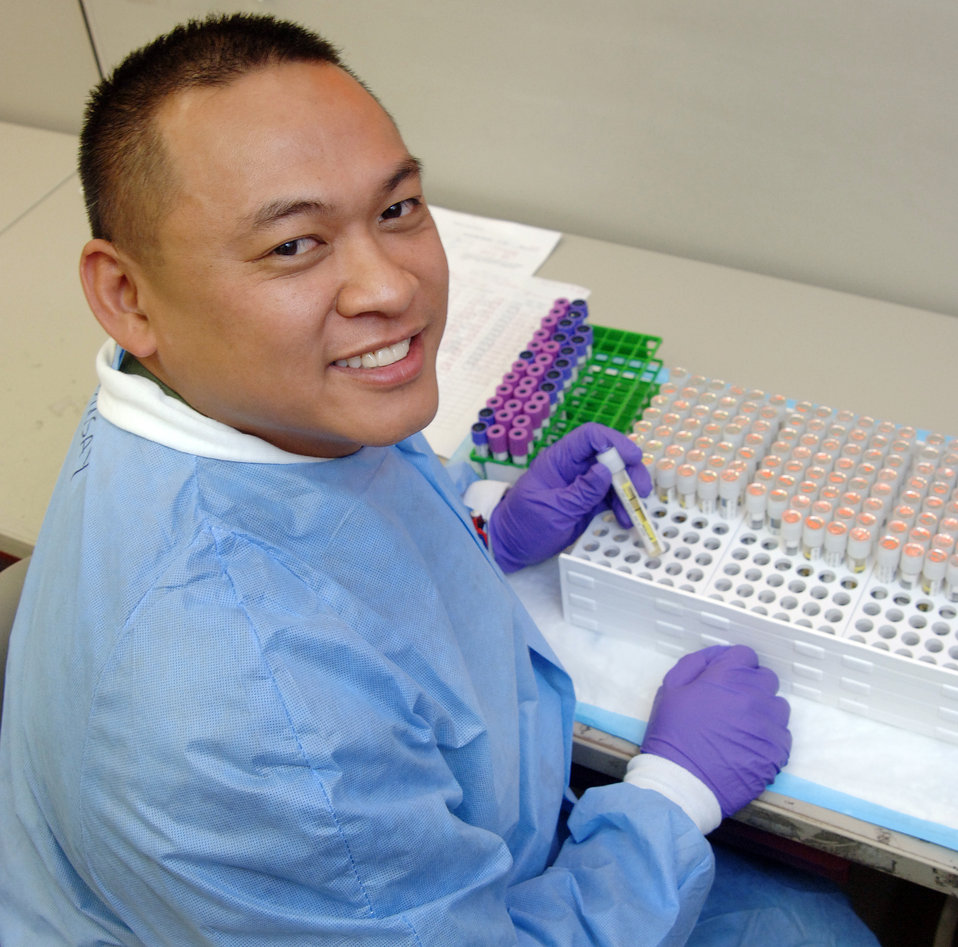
Central operations

Tech. Sgt. Cesar Abinsay works on some diagnostic specimens Wednesday, April 19, 2006. Sergeant Abinsay runs the day-to-day logistics at central operations for the Air Force Institute for Operational Health at Brooks City-Base, Texas. The institute receives specimens from more than 300 Department of Defense global facilities.